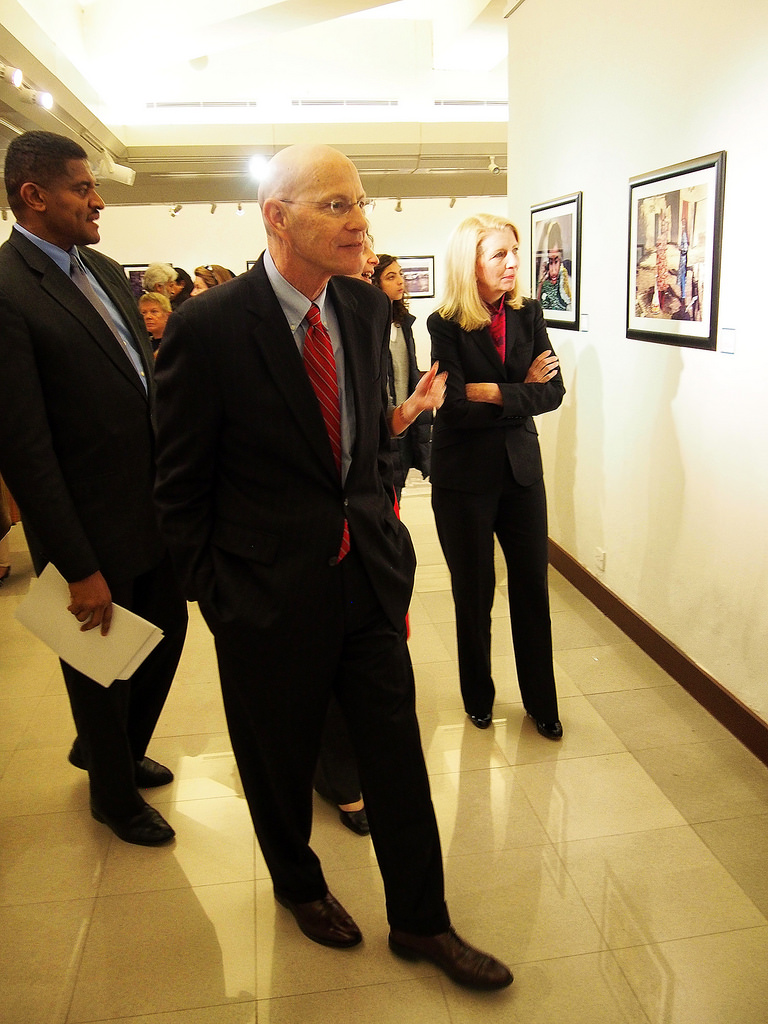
Catherine Russell, U.S. Ambassador-at-Large for Global Women’s Issues and USAID Pakistan Mission Director Gregory Gottleib attend a photographic exhibition featuring the work of acid attack survivors February 12, 2014 at Pakistan National Council of the Arts.

The event was sponsored by USAID and its partner, the Aurat Foundation, which implements the Gender Equity Program (GEP), a program focused on addressing women’s access to justice. The photographers are beneficiaries of the Acid Survivors Foundation (ASF), a GEP grantee.